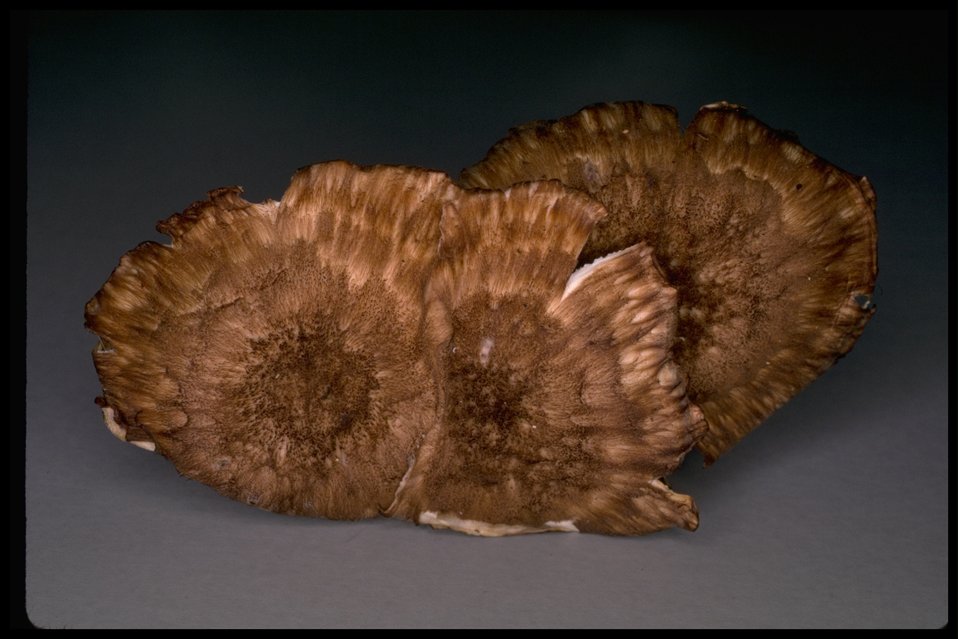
Bondarzewia mesenterica, commonly known as Bondarzewia.